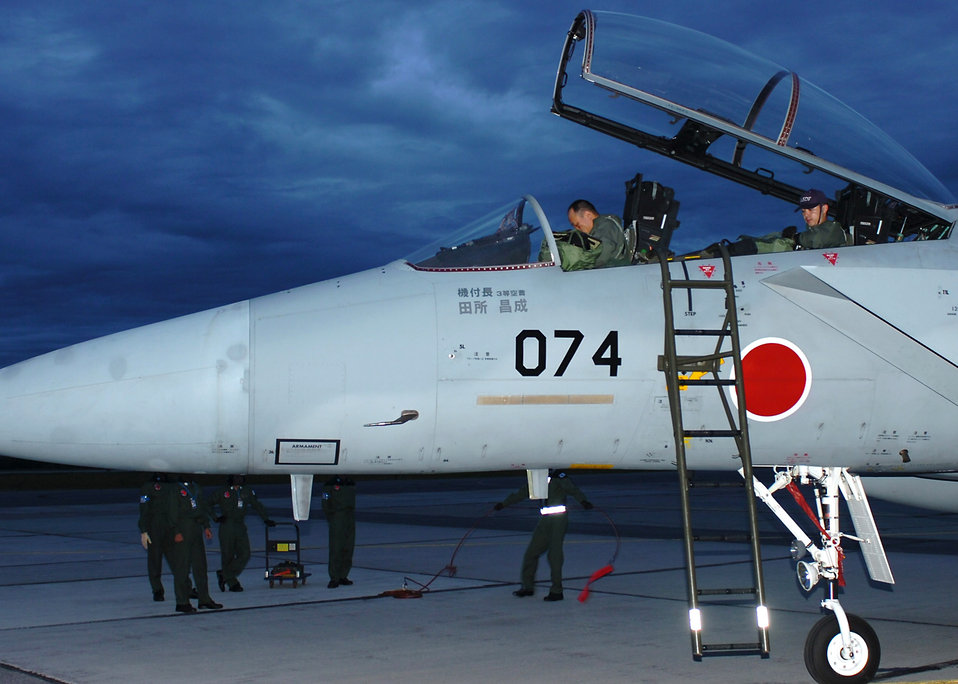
Japanese forces arrive for Red Flag-Alaska

An aircrew from the Japan Air Self-Defense Force exits an F-15 after a July 11 seven-hour flight across the Pacific Ocean from Hyukari Air Base near Tokyo to Eielson Air Force Base, Alaska. The JASDF airmen are participating in Red Flag-Alaska, a multinational air combat training exercise over the Pacific Alaskan Range Complex.